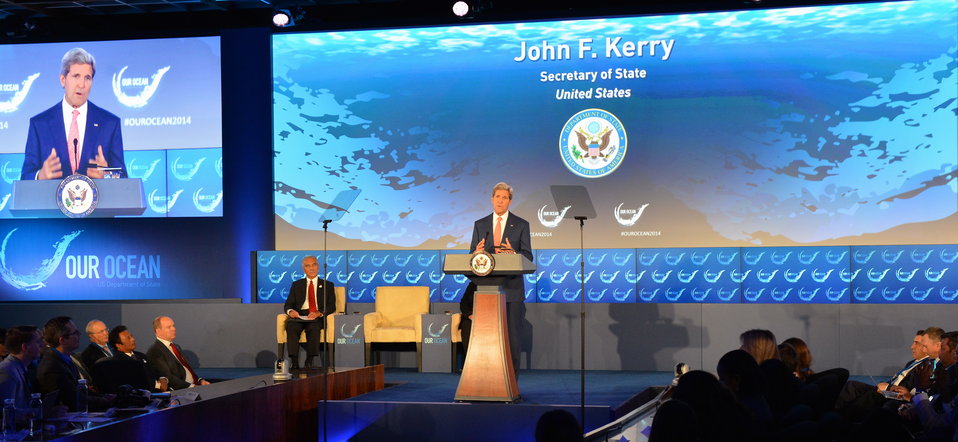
Secretary Kerry Delivers Remarks at the Opening Session of the 'Our Ocean' Conference

U.S. Secretary of State John Kerry delivers remarks at the opening session of the 2014 'Our Ocean' conference at the U.S. Department of State in Washington, D.C. on June 16, 2014.